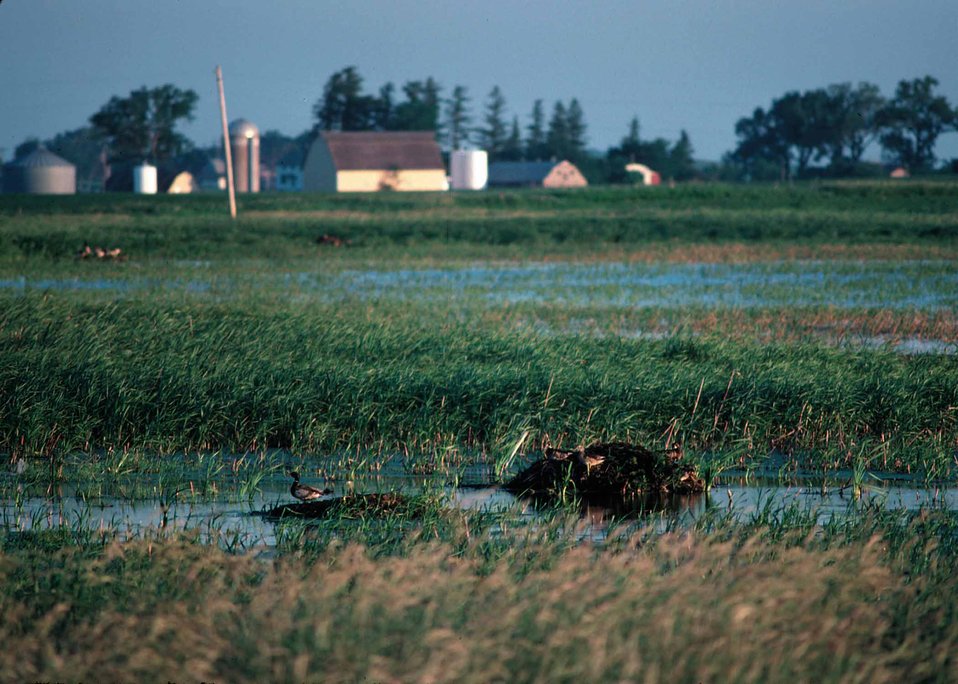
Wetland in northcentral Iowa.